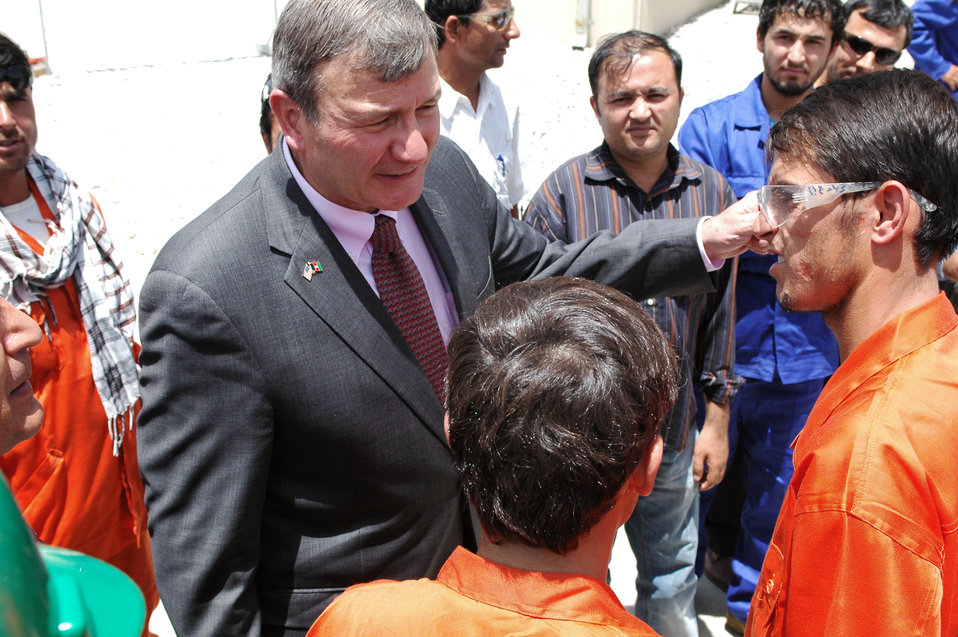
105 MW Tarakhil Power Plant Handover